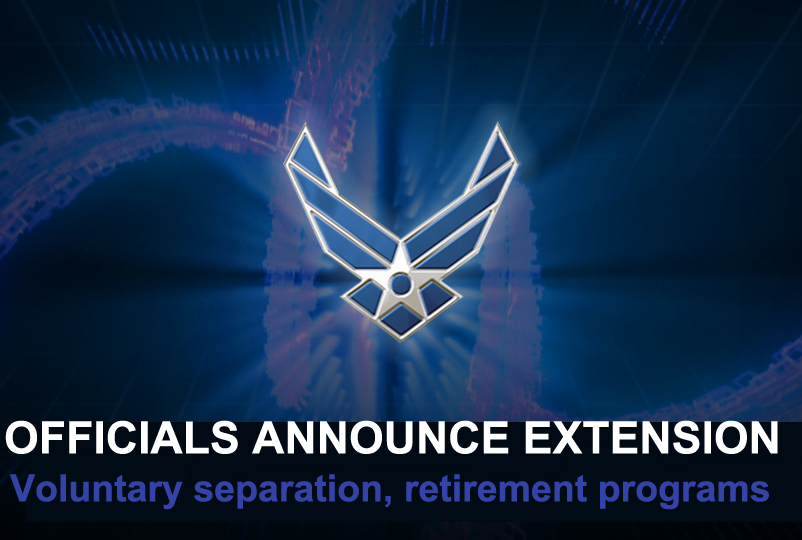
Air Force officials announce voluntary separation, retirement extensions